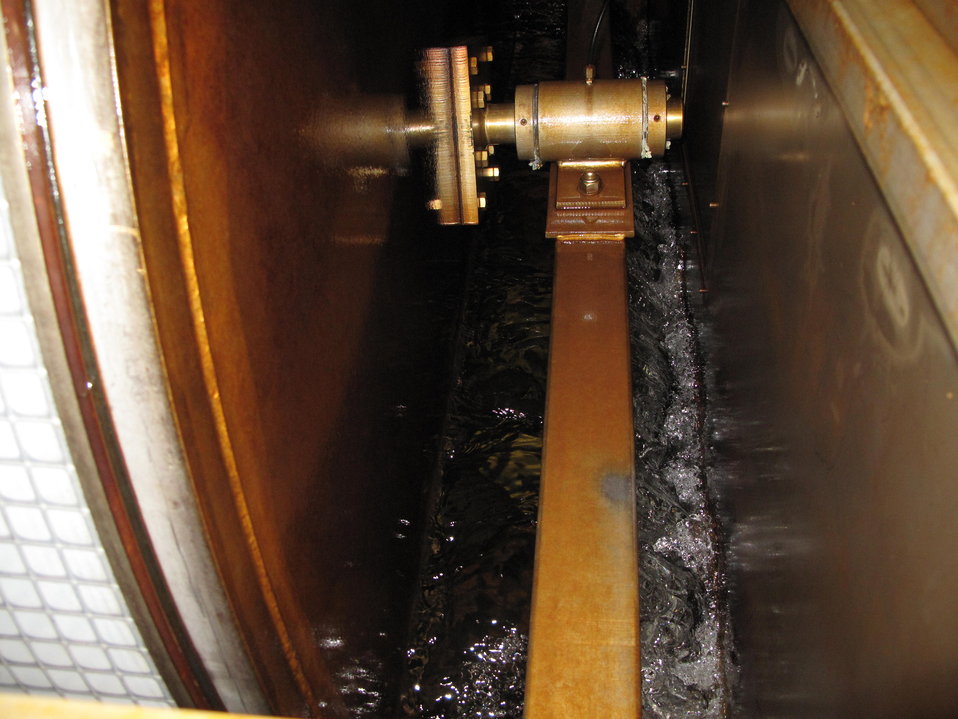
Water filtration at Leadville National Fish Hatchery to prevent whirling disease.